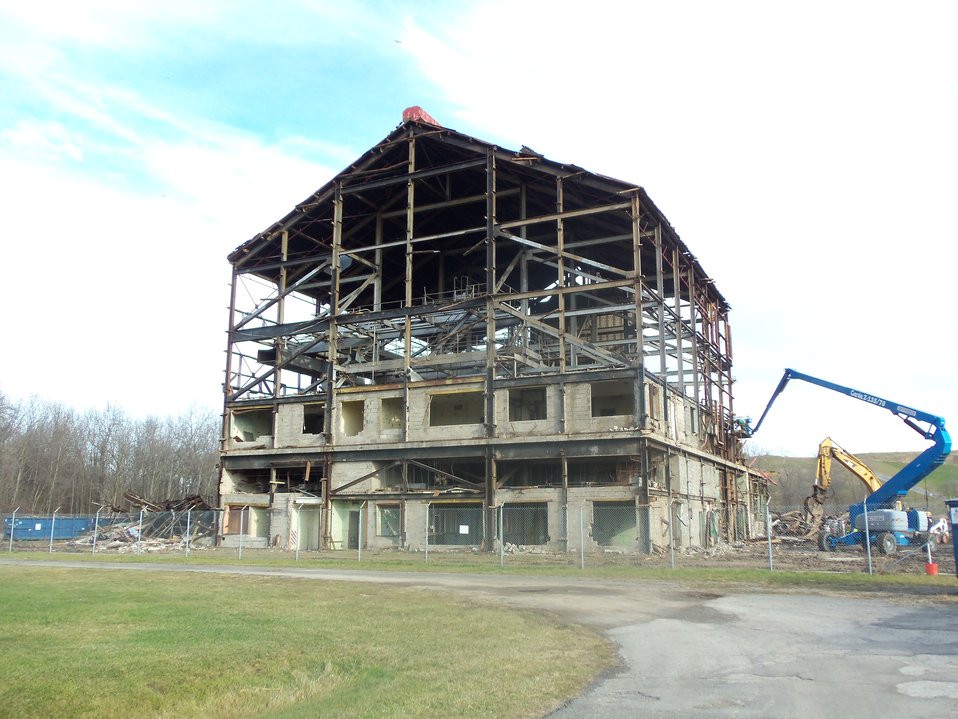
BLDG 401 SHELL DECONSTRUCTION

Activities from the Niagara Falls Storage Site, which is associated with the former Lake Ontario Ordnance Works. Formerly Utilized Sites Remedial Action Program (FUSRAP), a program initiated in 1974 to identify, investigate and clean up or control sites that were part of the Nation's early atomic energy and weapons program. Activities at the sites that are eligible for FUSRAP were conducted by Manhattan Engineer District (MED) or the Atomic Energy Commission (AEC), both predecessors of the Department of Energy (DOE). The U.S. Army Corps of Engineers was assigned management of FUSRAP by Congress in 1997.